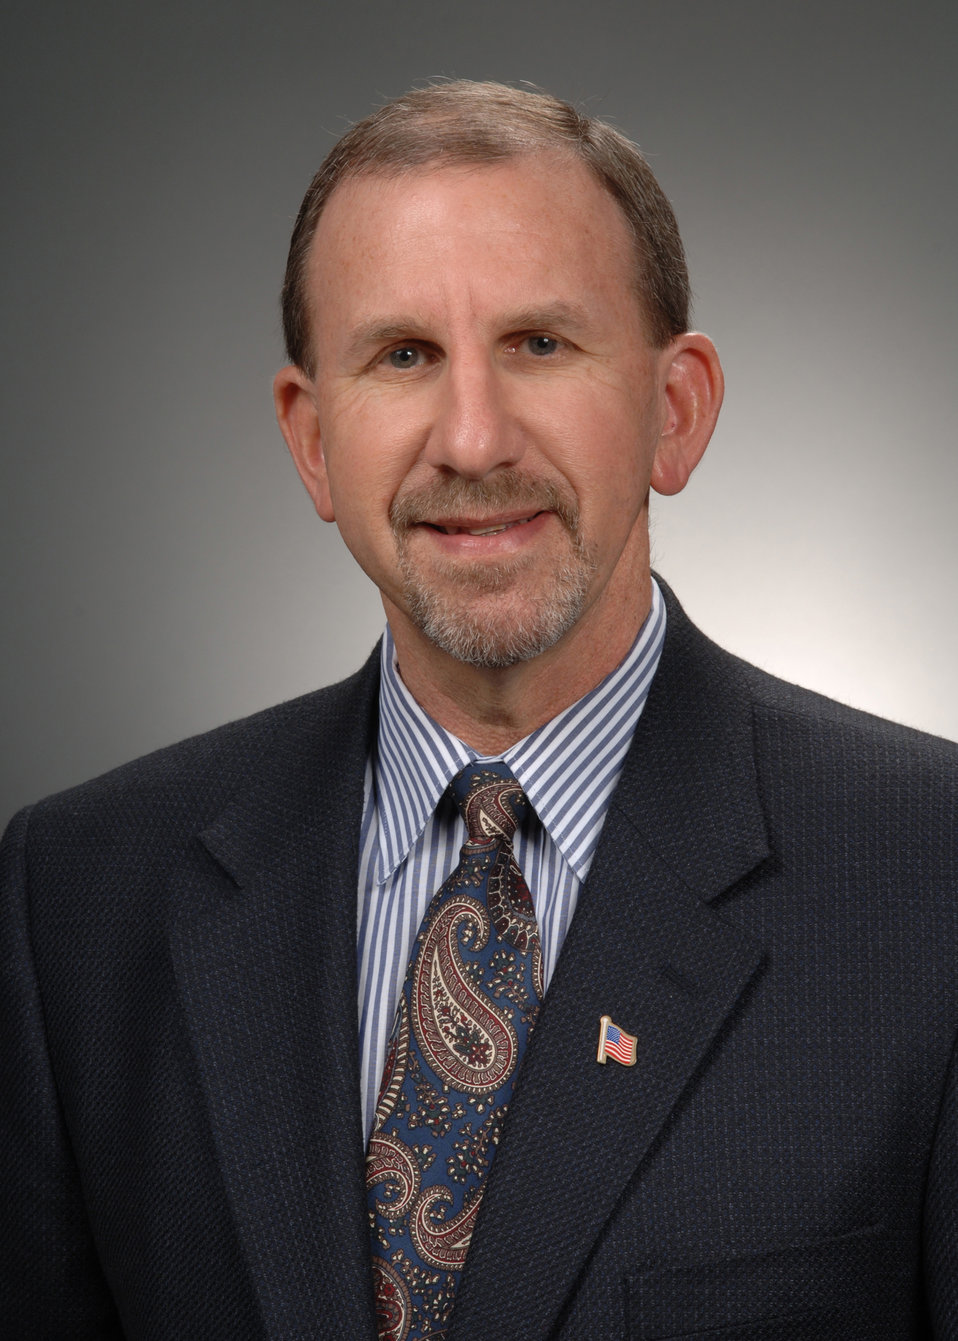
Ron Ross